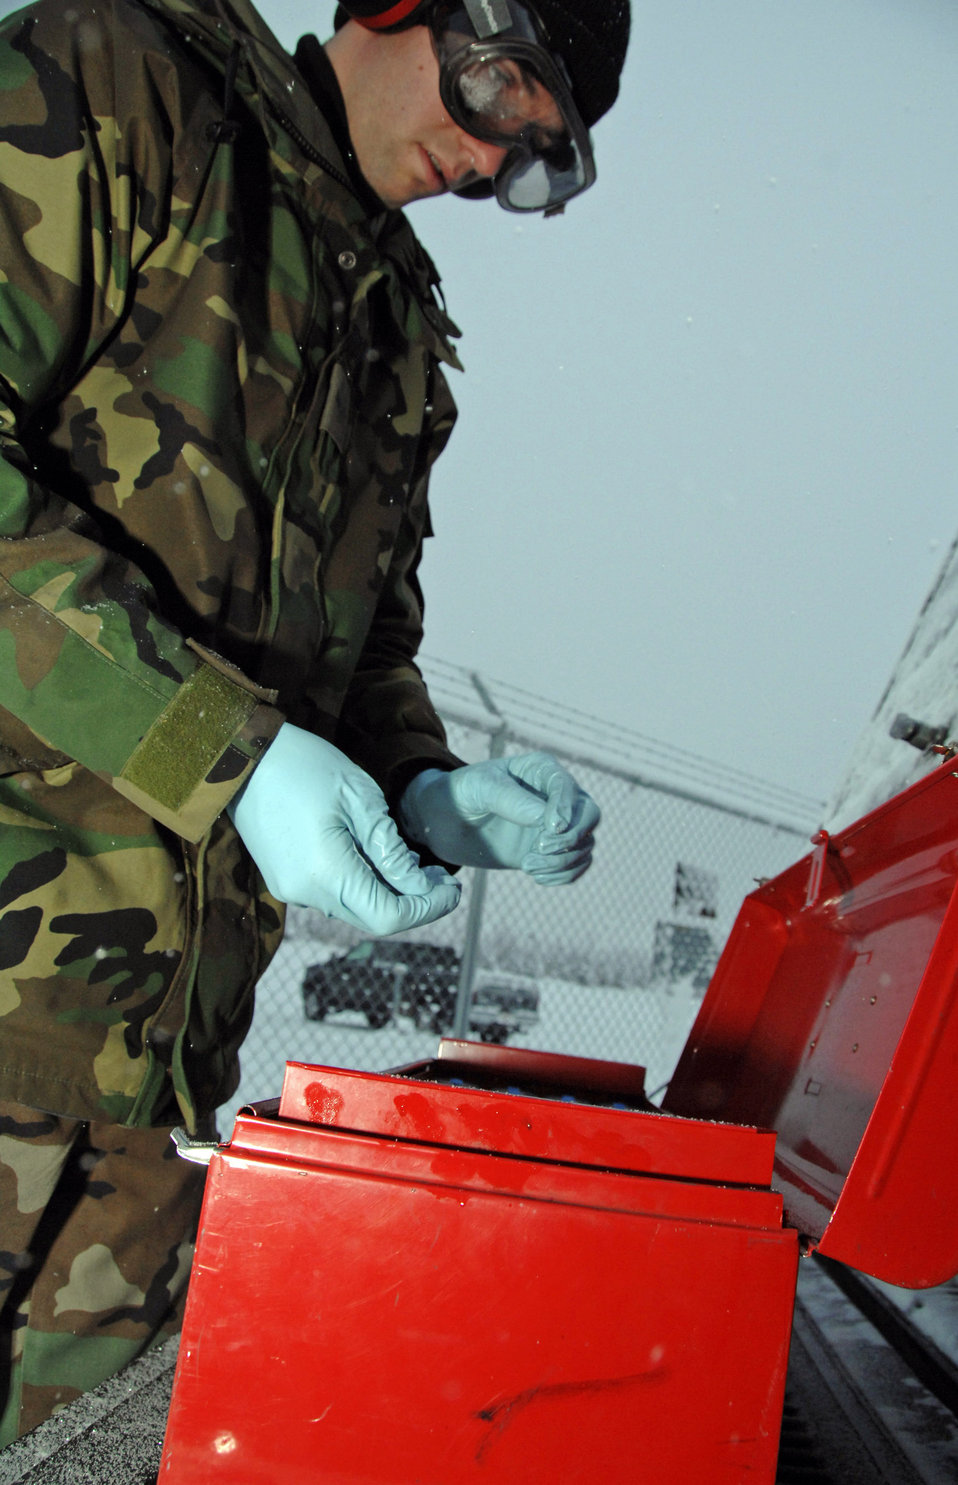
'Fuel Doctor' on duty

Airman 1st Class Sean McDonagh organizes his fuel sampling instruments Oct. 24 at Eielson Air Force Base, Alaska. Making sure the fuel used by the aircraft here at Eielson is always good to go, Airman McDonagh helps assure the process by constantly sampling the fuel lines and also the trucks that distribute it to the aircraft. Airman McDonagh is a fuels laboratory technician assigned to the 354th Logistic Readiness Squadron.